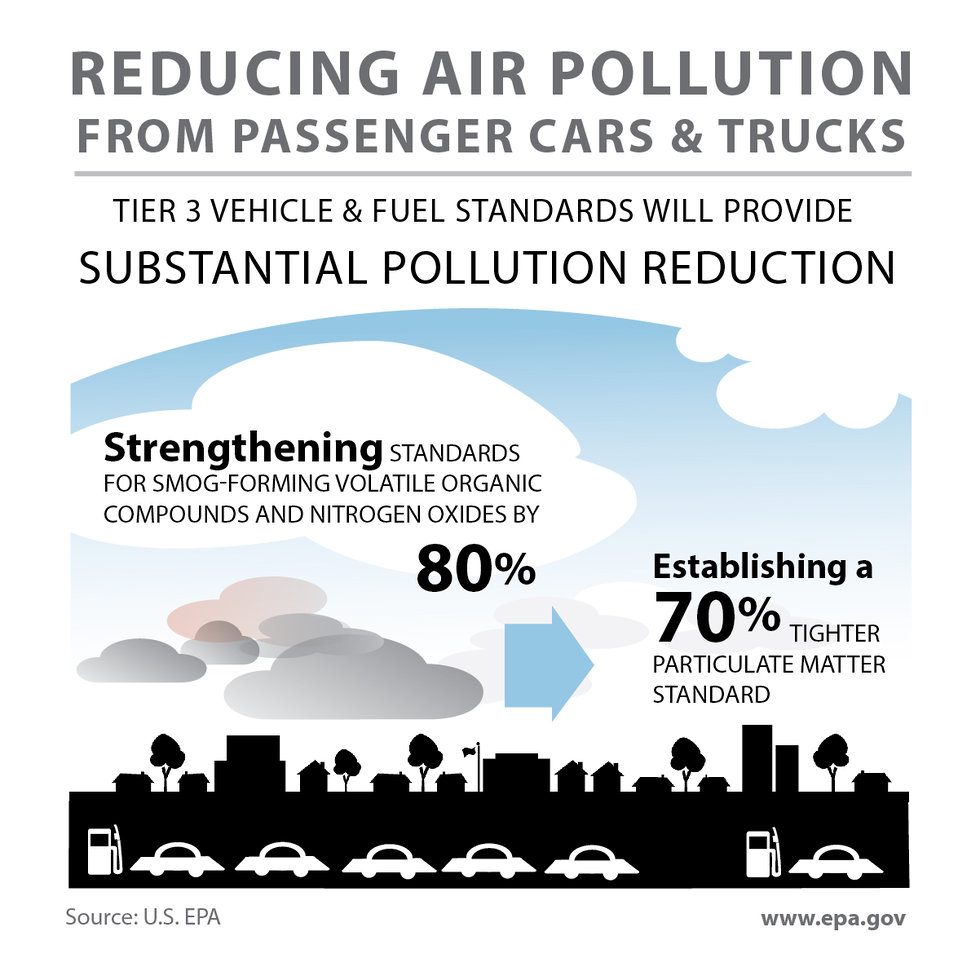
Reducing Air Pollution from Passenger Cars and Trucks

Our new vehicle and fuel standards slash emissions of harmful pollutants, strengthening the standards for smog-forming volatile organic compounds and nitrogen oxides by 80%, establishing a 70% tighter particle pollution standard, and virtually eliminating fuel vapor emissions.